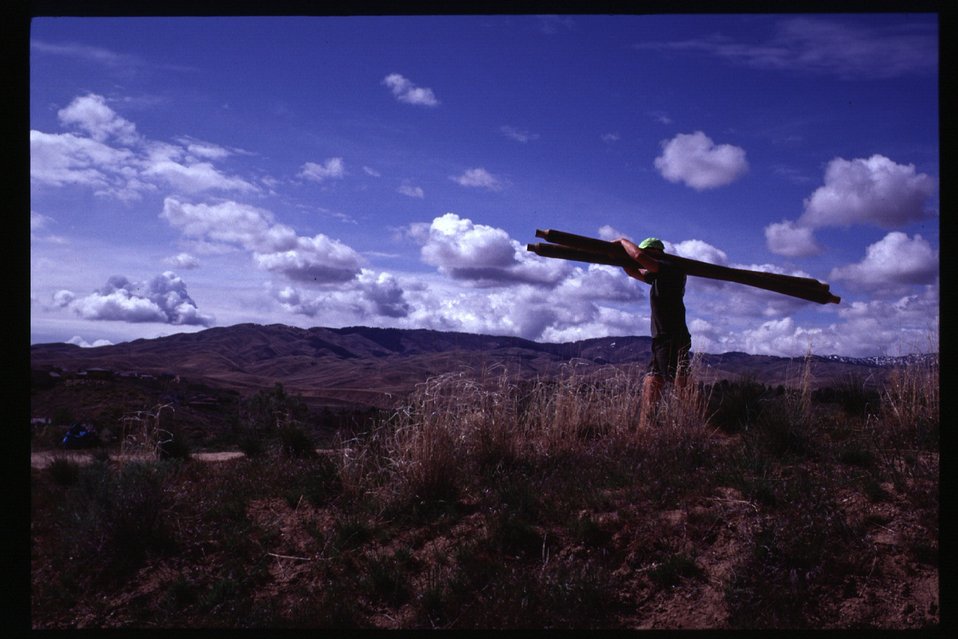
Rangeland and environmental education Boise Front Tending our Foothills Trail work Camels Back Park Four Rivers Field Office LSRD Lower Snake River District